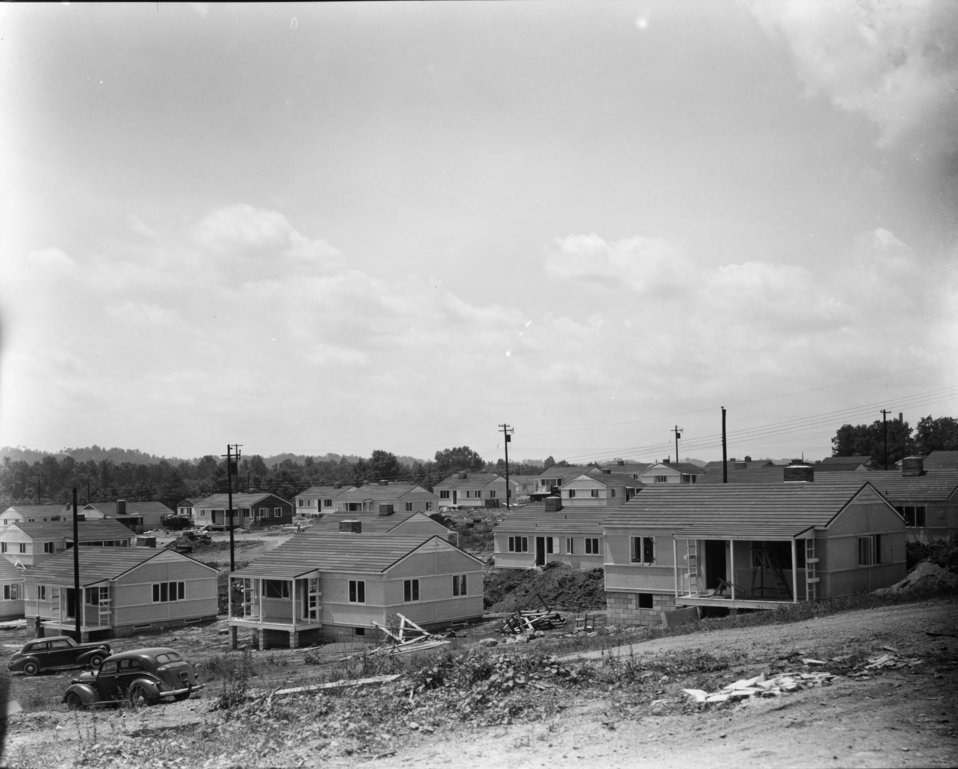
Construction activity at Oak Ridge